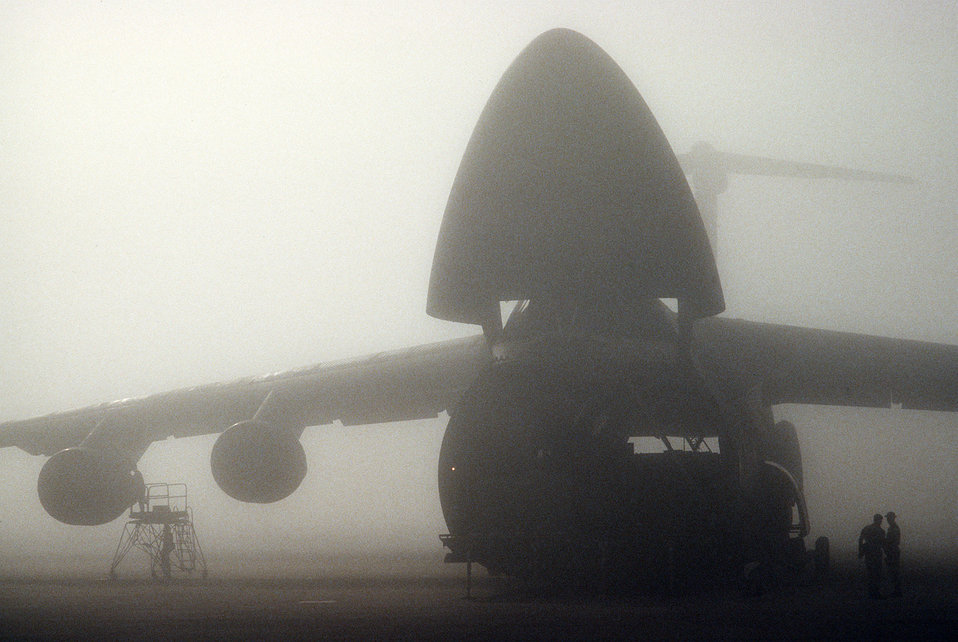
C-5 Galaxy

1990's -- A C-5 Galaxy transport aircraft from the 709th Military Airlift Squadron, Dover Air Force Base, Del., sits in the dense Saudi fog as maintenance crews make repairs and systems checks during Operation Desert Shield.